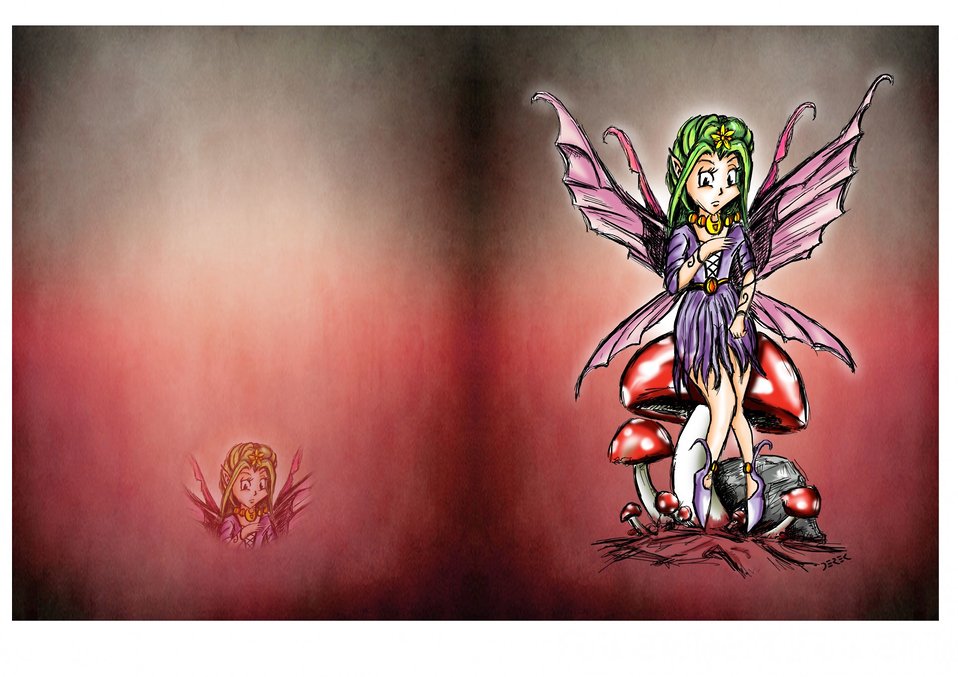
Fairy on mushroom card

A fairy sitting on a mushroom. this is set up to print onto a4 card, fold and trim..